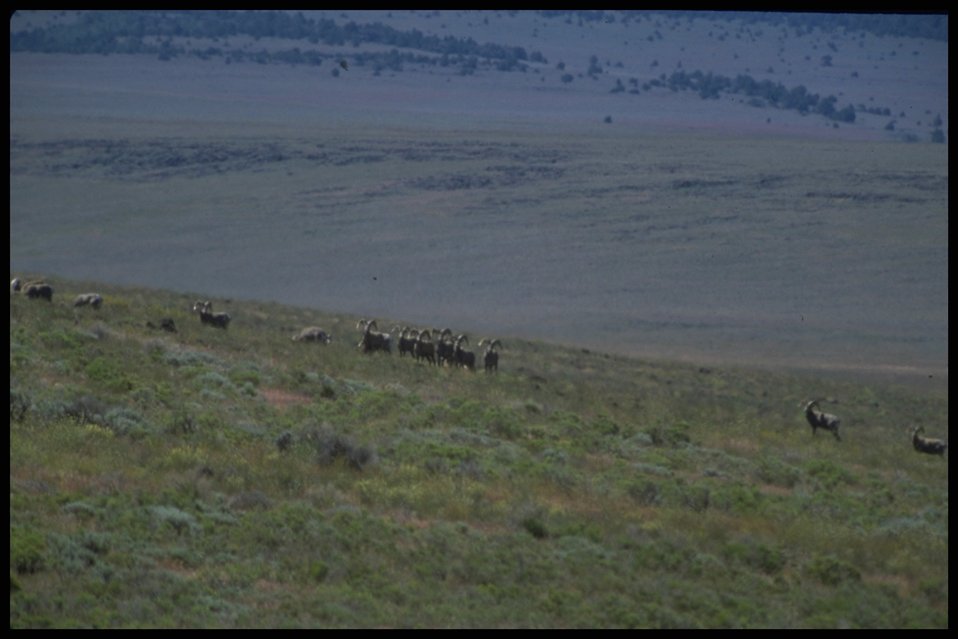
Far shot of sheep, Lakeview District.